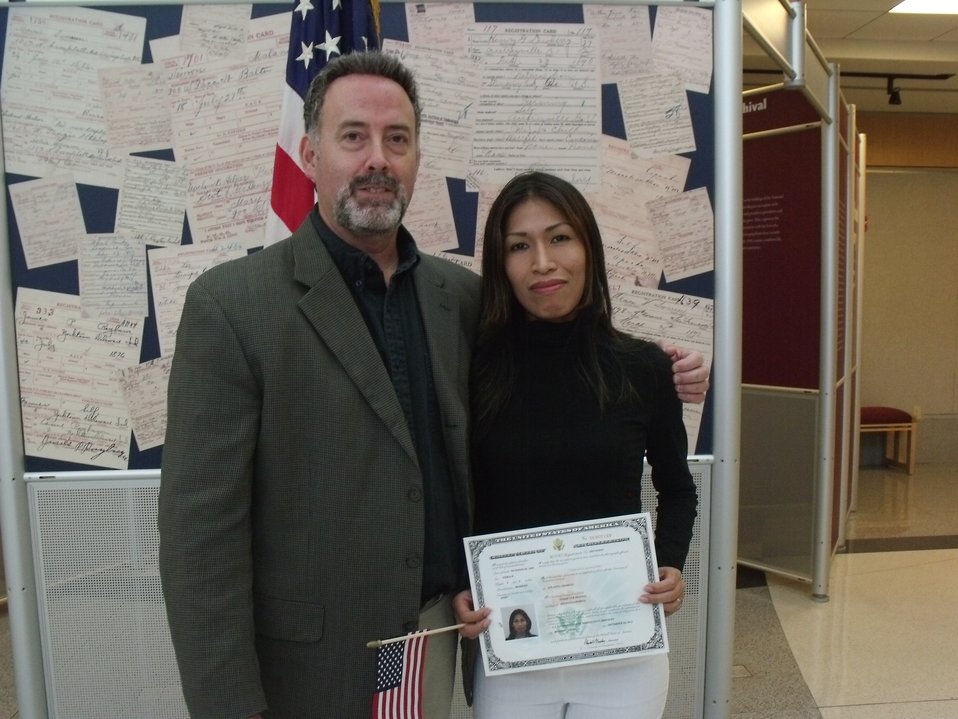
New Citizens